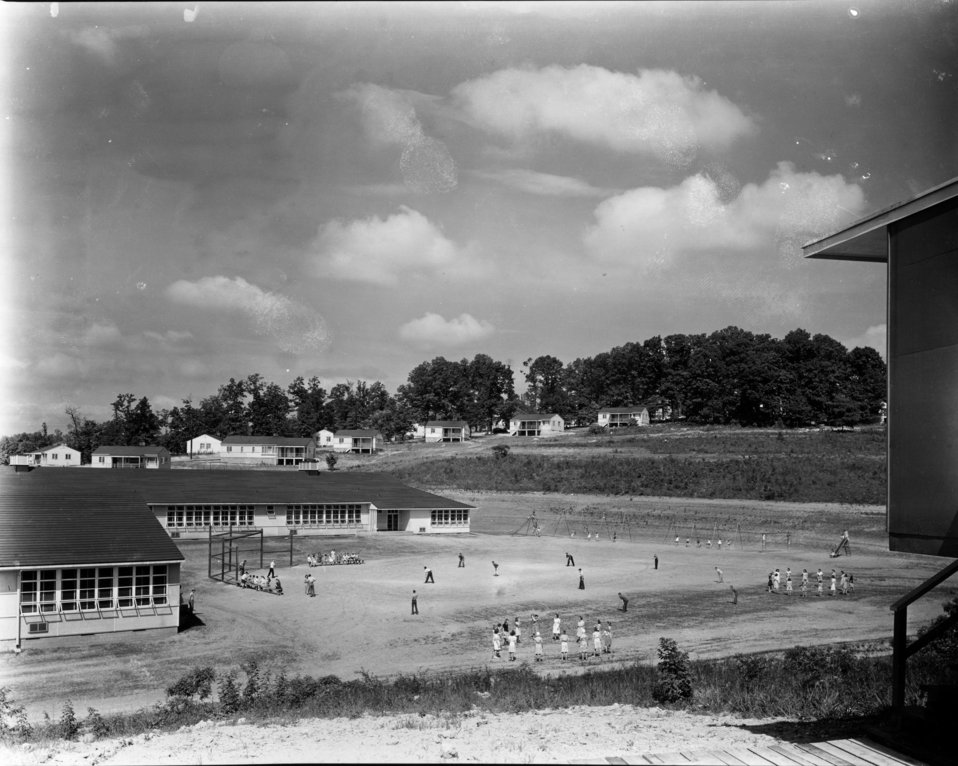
Schools at Oak Ridge